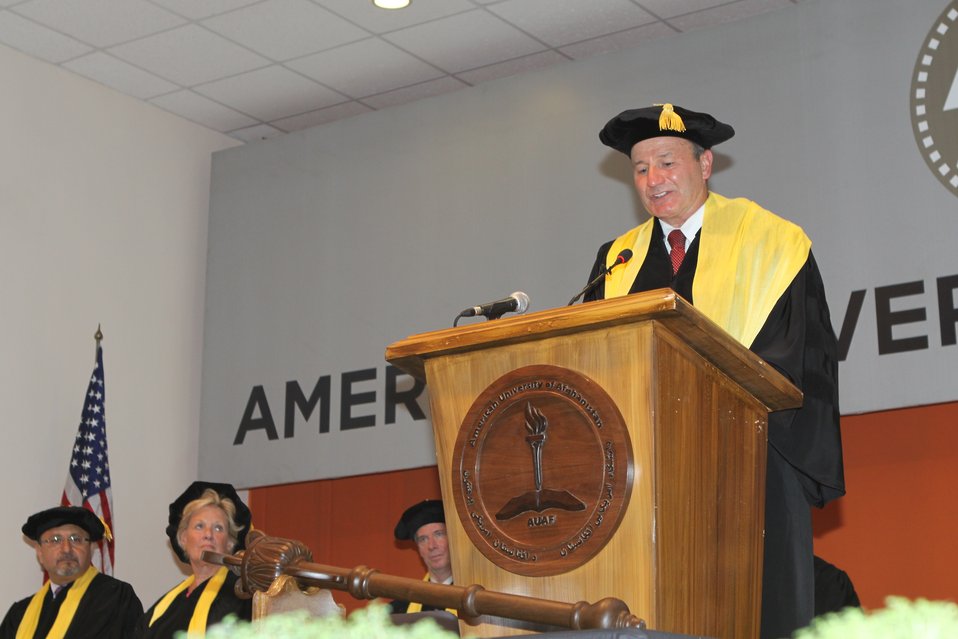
100526 AUAF Graduation 211